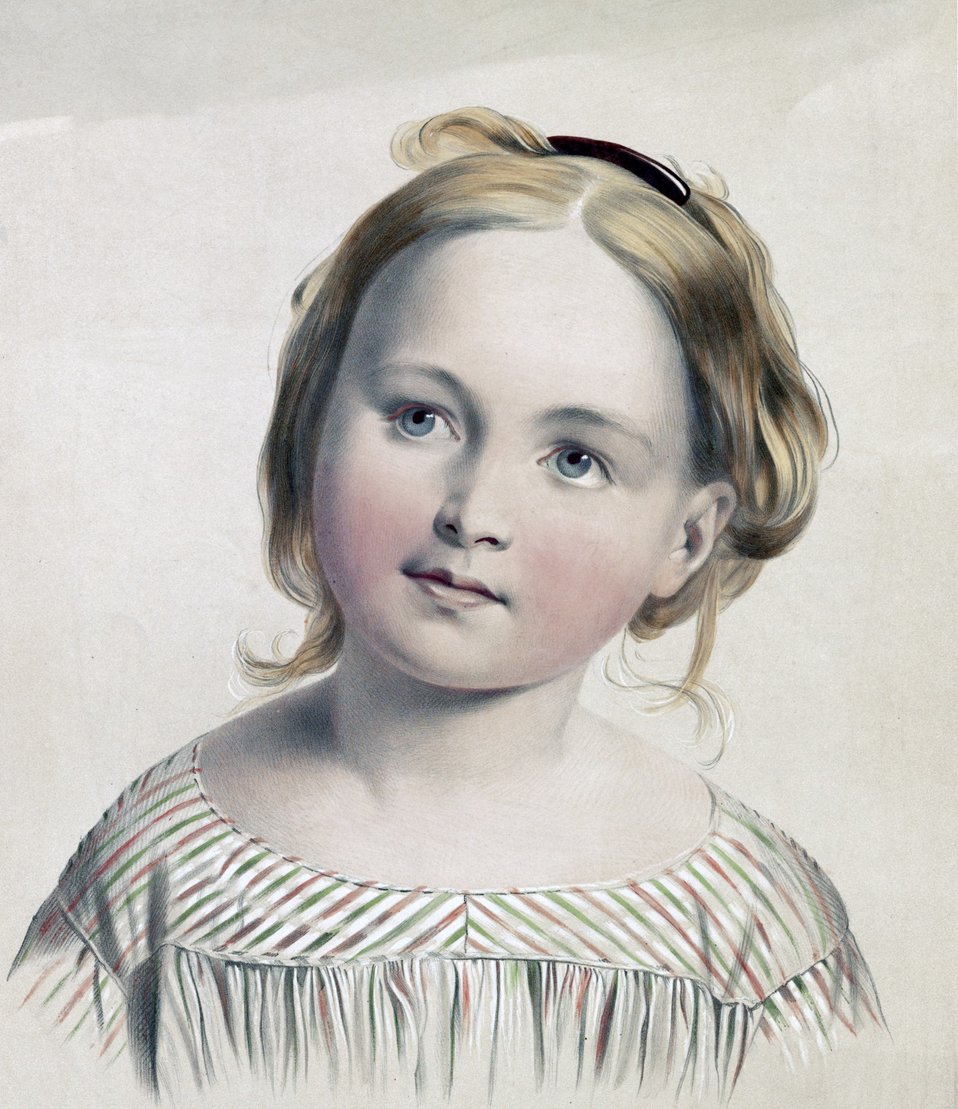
Pretty girl portrait painting

Public domain vintage portrait painting of a pretty child with blue eyes.